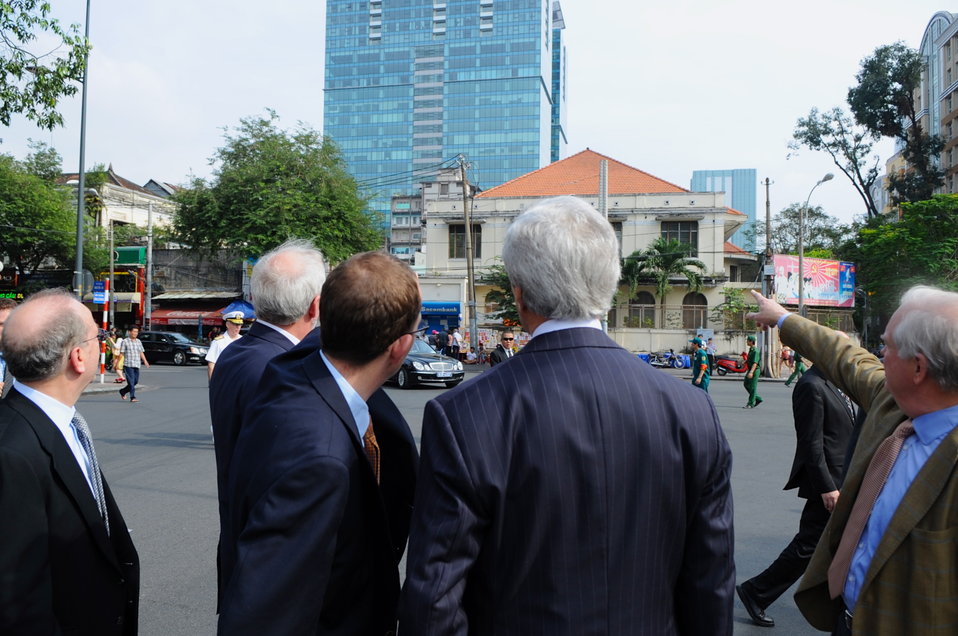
Secretary Kerry Views Building Where Americans Fled Saigon

U.S. Secretary of State John Kerry, during a visit to Ho Chi Minh City, Vietnam, on December 14, 2013, views the beige building - set against modern skyscrapers - where a helicopter evacuated the final Americans during the fall of then-Saigon in 1975.